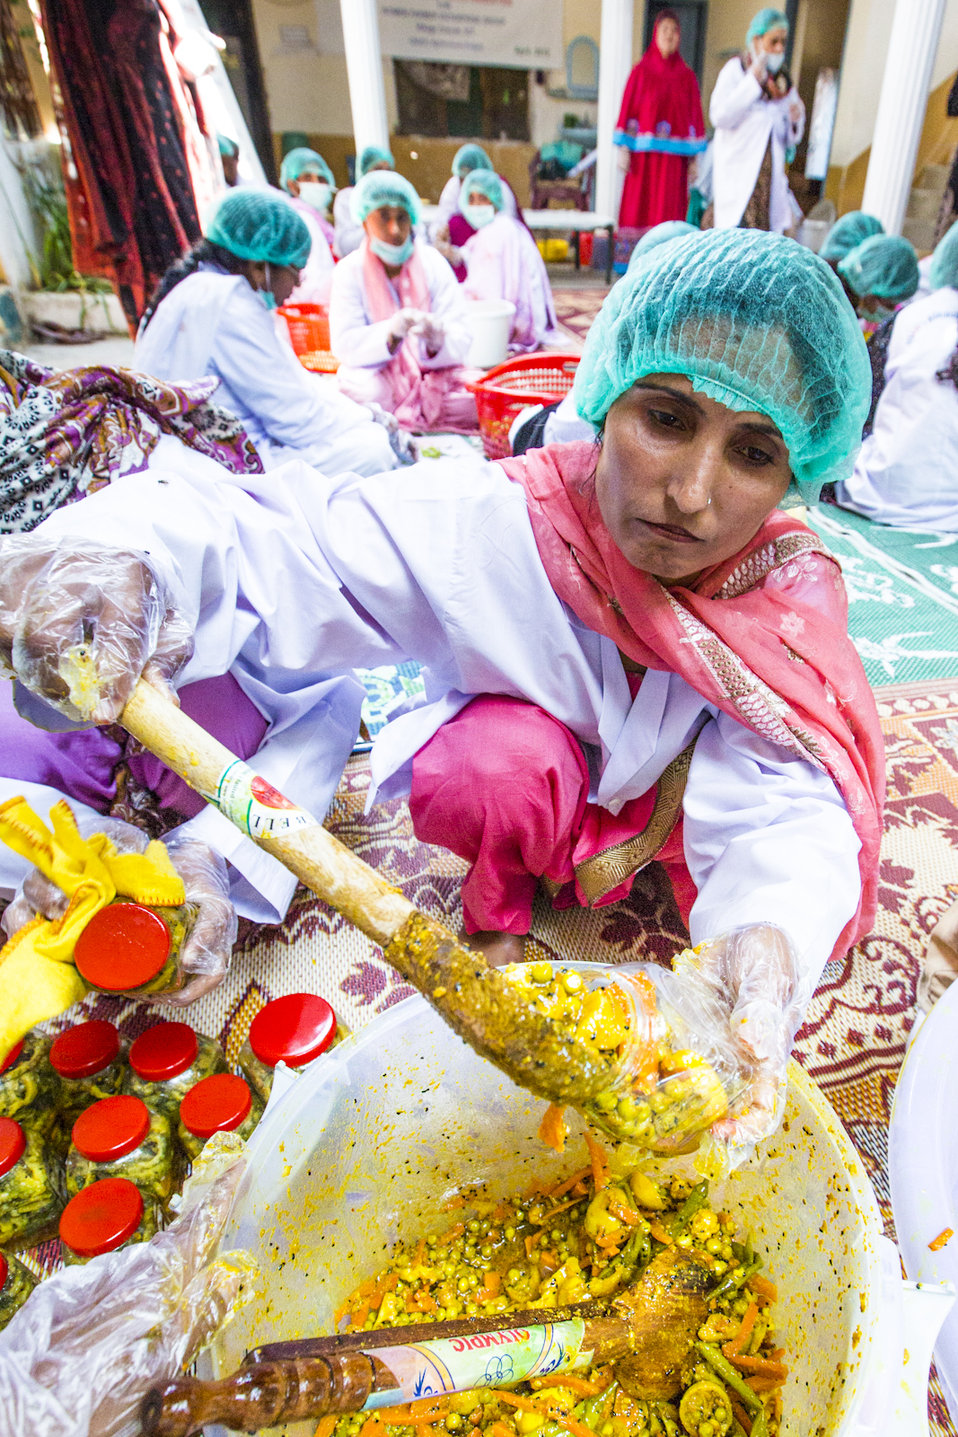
USAID's Agribusiness Project Women FEG for Food Processing - Pickle Production at Village Jabbi

www.usaid.gov/pk/db/sectors/growth/project 750.html